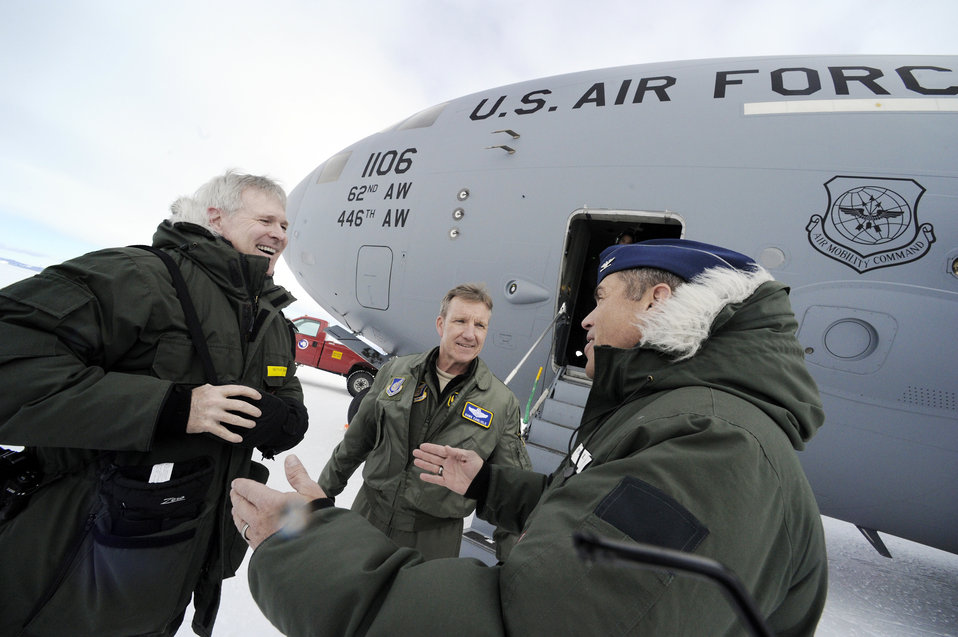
Logistic support to Antarctic science effort wraps up

Col. Paul Sheppard (right) welcomes Secretary of the Navy Ray Mabus and Lt. Gen. Hawk Carlisle to McMurdo Station Feb. 2, 2010 in Antarctica. Colonel Sheppard is the Joint Task Force Support Forces Antarctica deputy commander. General Carlisle is the 13th Air Force commander and the Joint Forces commander.